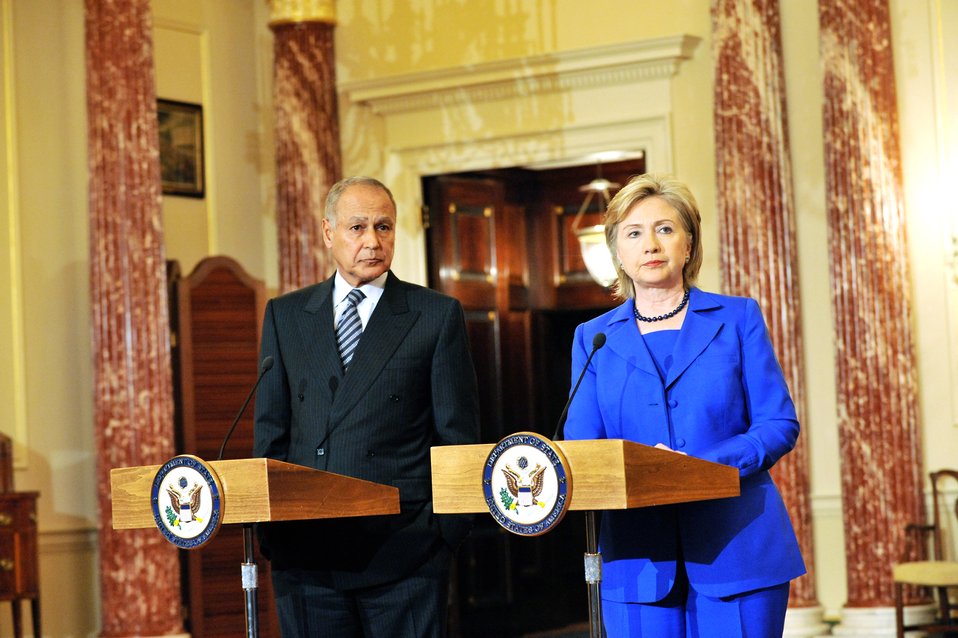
Secretary Clinton Meets With Egyptian Foreign Minister

U.S. Secretary of State Hillary Rodham Clinton hosts a bilateral meeting with Egyptian Foreign Minister Ahmed Ali Aboul Gheit at the U.S. Department of State in Washington, DC May 27, 2009.